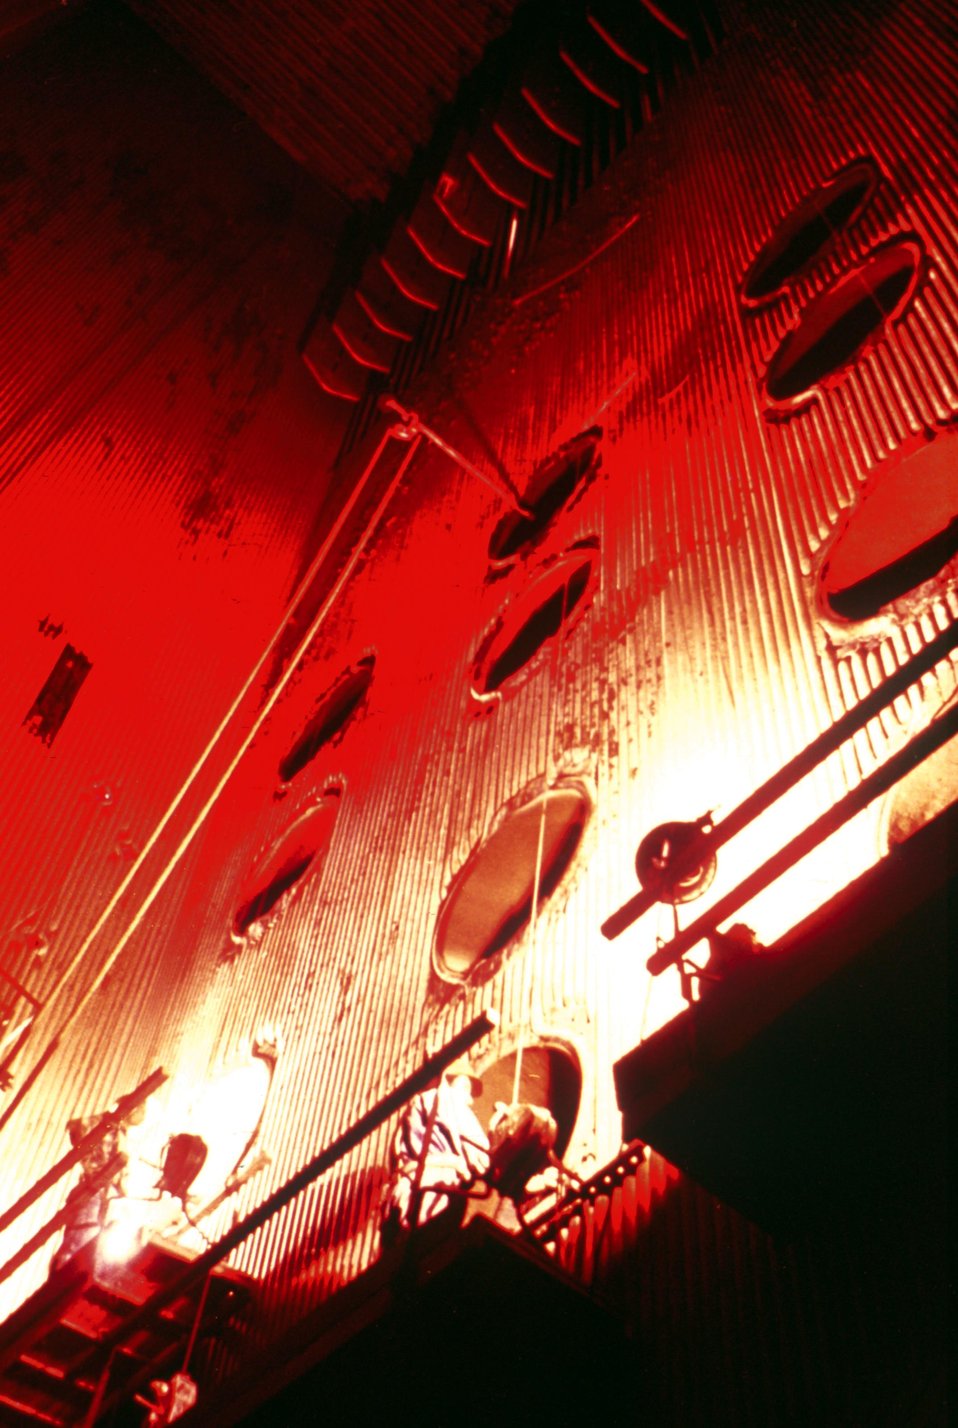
La chaudiÌre d'une centrale thermique.